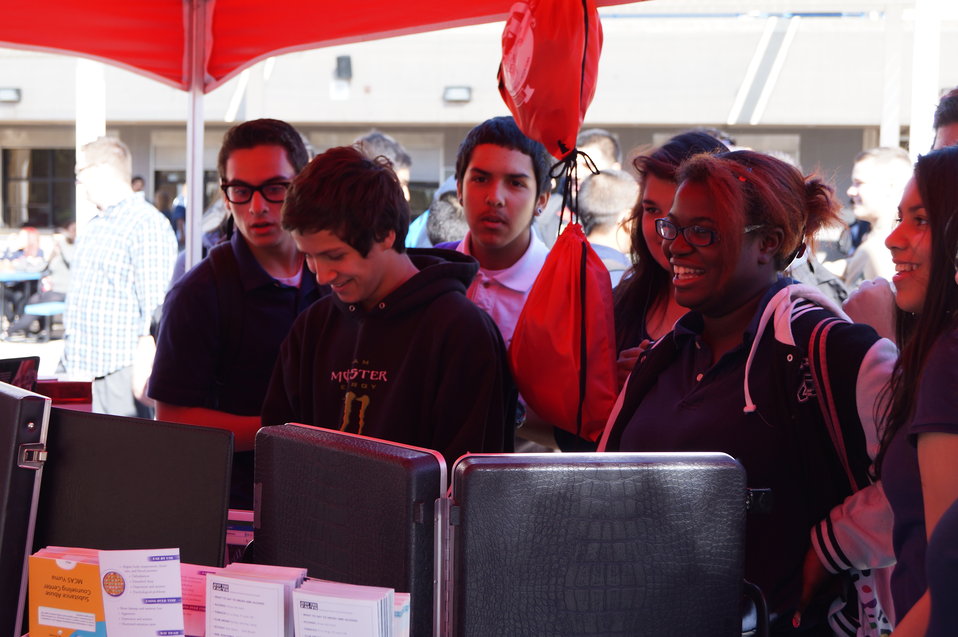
National Drug Facts Week - YUMA HIGH

The Drug Demand Reduction Program out of Yuma Arizona held numerous events at local schools to support NIDA's National Drug Facts Week, Jan. 27-Feb. 2 2014. Teens participated in drug awareness games, and helped to Shatter the Myths about teen substance abuse.